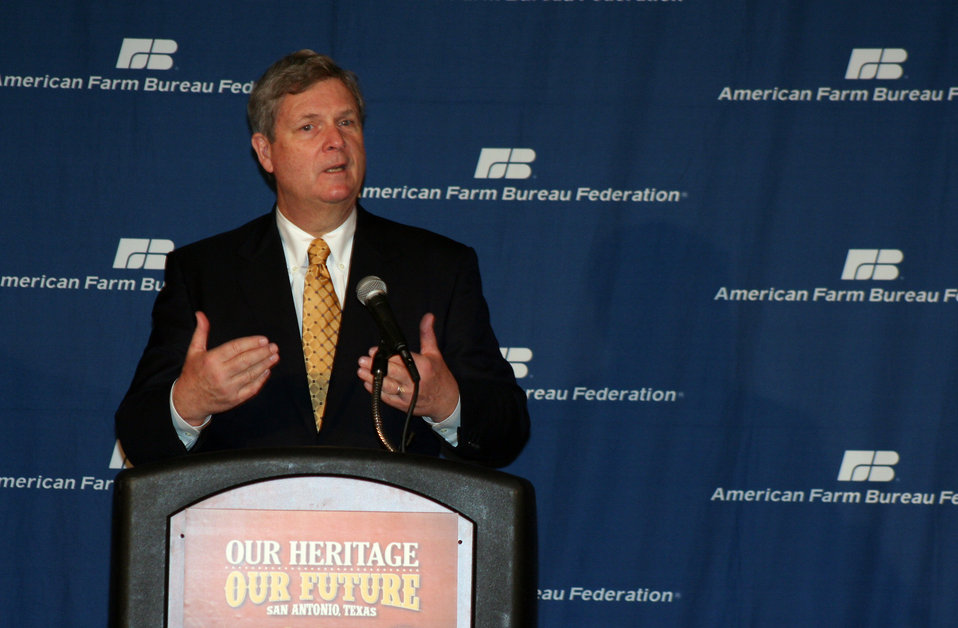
Agriculture Secretary Tom Vilsack answers questions from farm and national media at a press conference during the 95th annual American Farm Bureau Convention in San Antonio, TX on Monday, Jan. 12, 2014.